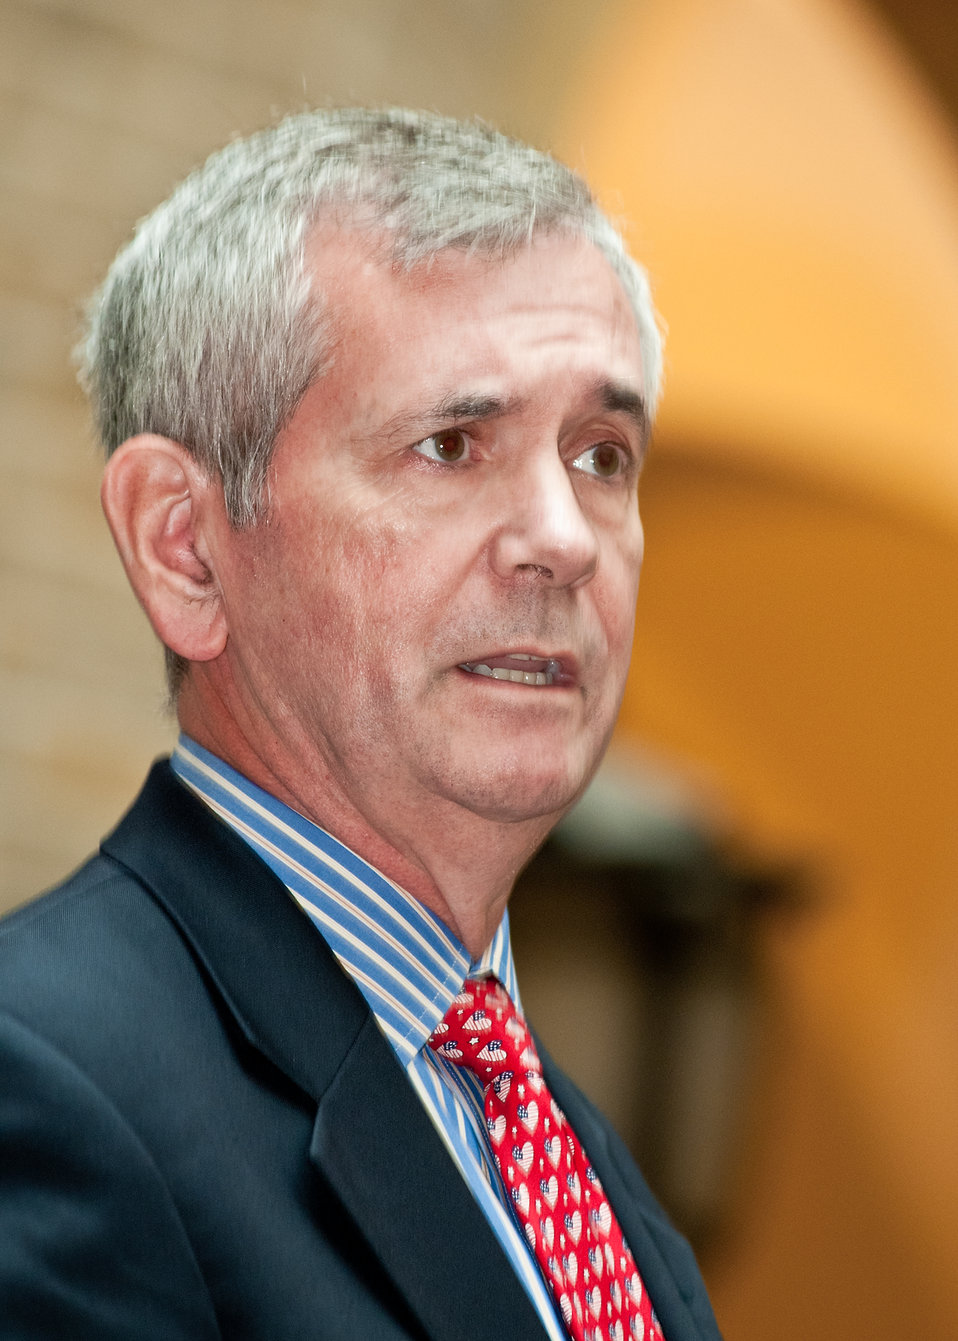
John Hanson, Senior Vice President, United Serviceman’s Organization (USO) offers the keynote address at the U.S. Department of Agriculture employees to the kick-off of the USDA 2011 Combined Federal Campaign “Compassion of Individuals, Power of Community” at the USDA in Washington, DC, Wednesday, September 21, 2011. The theme of the 2011 campaign is “Celebrating 50 Years of Caring, Serving and Giving.” The Federal Combined Campaign exhibits represented organizations serving military personnel and their families.